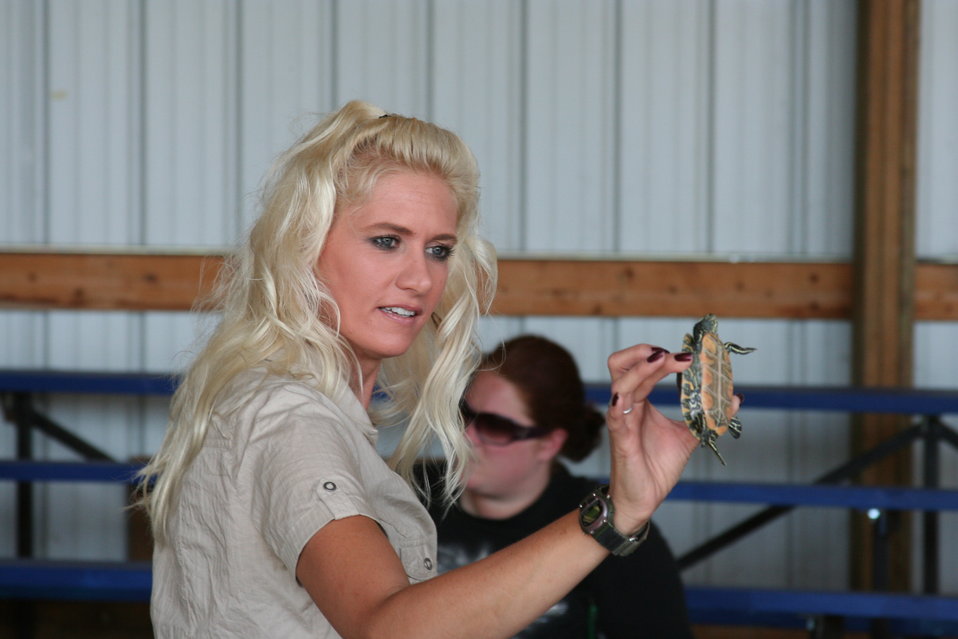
2011 Huron Prairie Fest